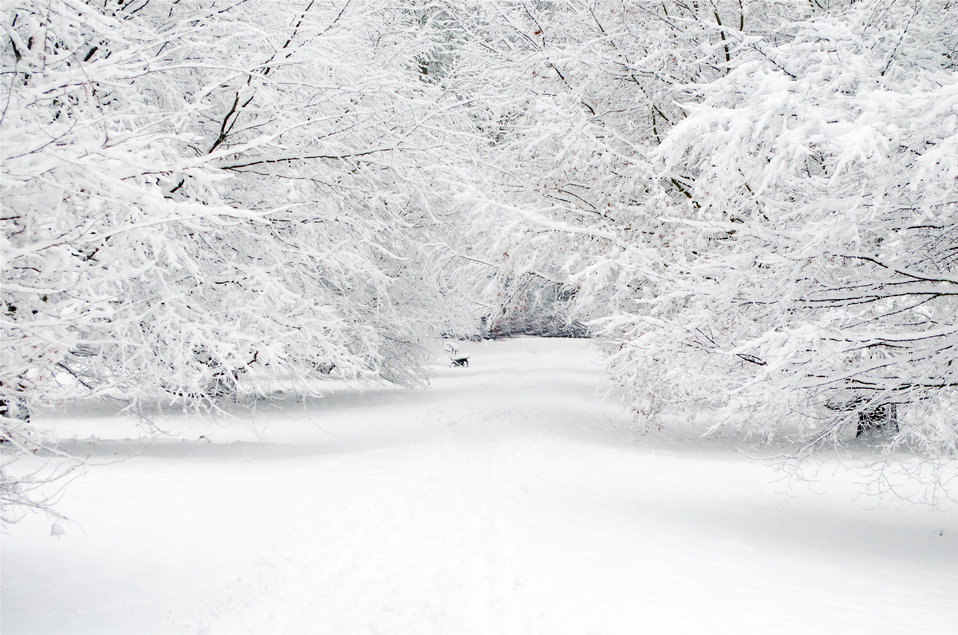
Snowy trees.